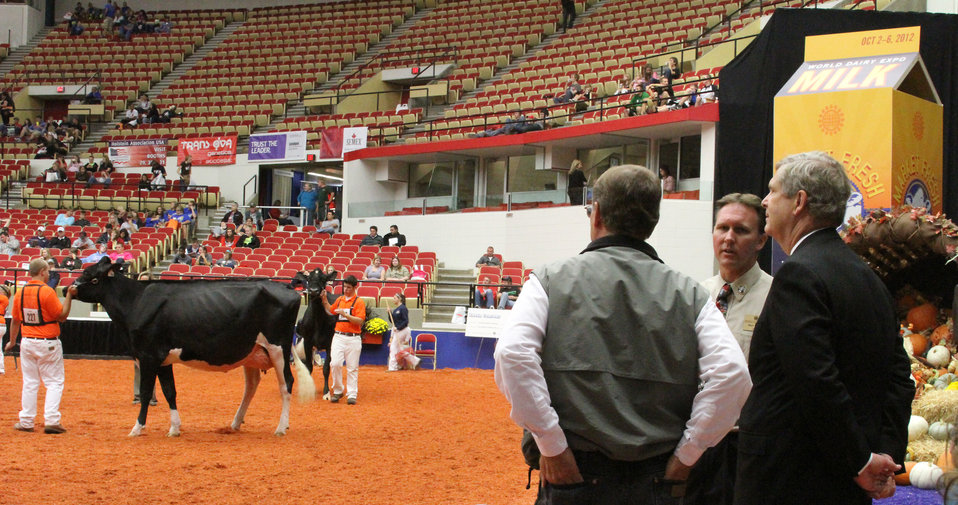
Agriculture Secretary Tom Vilsack looks at the cow judging contest at the 2012 World Dairy Expo in Madison, WI on Oct. 2, 2012. The World Dairy Expo serves as a forum for dairy producers, companies, organizations and other dairy enthusiasts to come together to compete, exchange ideas, knowledge, technology, and commerce.